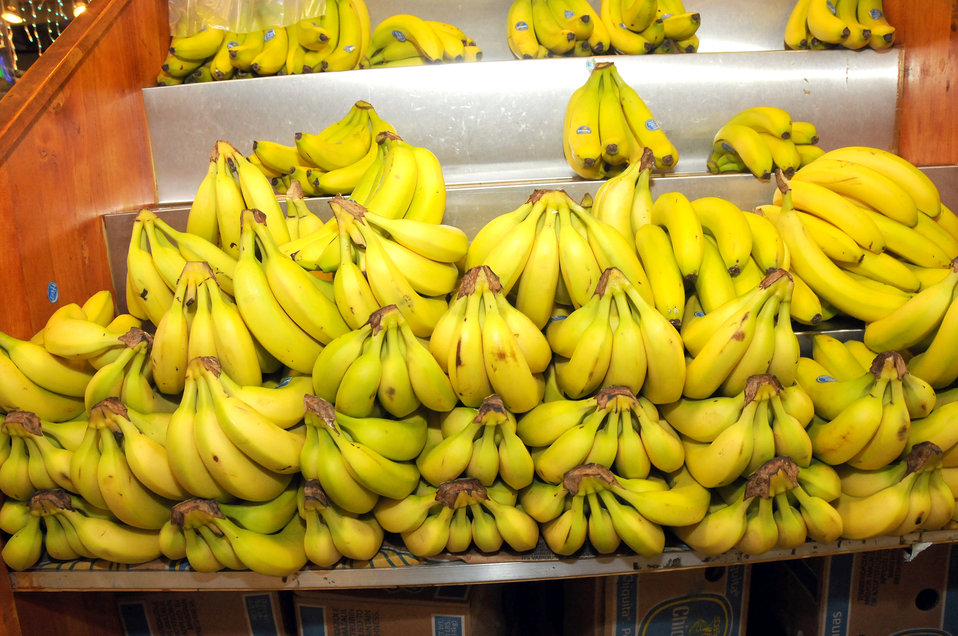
The Reading Terminal Market offers produce fresh from the field to the people of Philadelphia, PA on April 3, 2009. There are Amish specialties, fruits, vegetables, meats, seafood, and poultry. Reading Terminal Market opened for business in 1892 with approximately 78,000 square feet and almost 800 spaces for vendors. The Market was revitalized in the 1990’s and today is still the gastronomic bazaar that its original planners had envisioned. Many of the historic Market stands survived the reconstruction and are once again filled with local produce, fresh eggs, milk, meats, poultry, seafood, handmade crafts, jewelry, and clothing. The Market is home to more than 80 merchants, two of whom are descendants of the original stand holders from a century before.